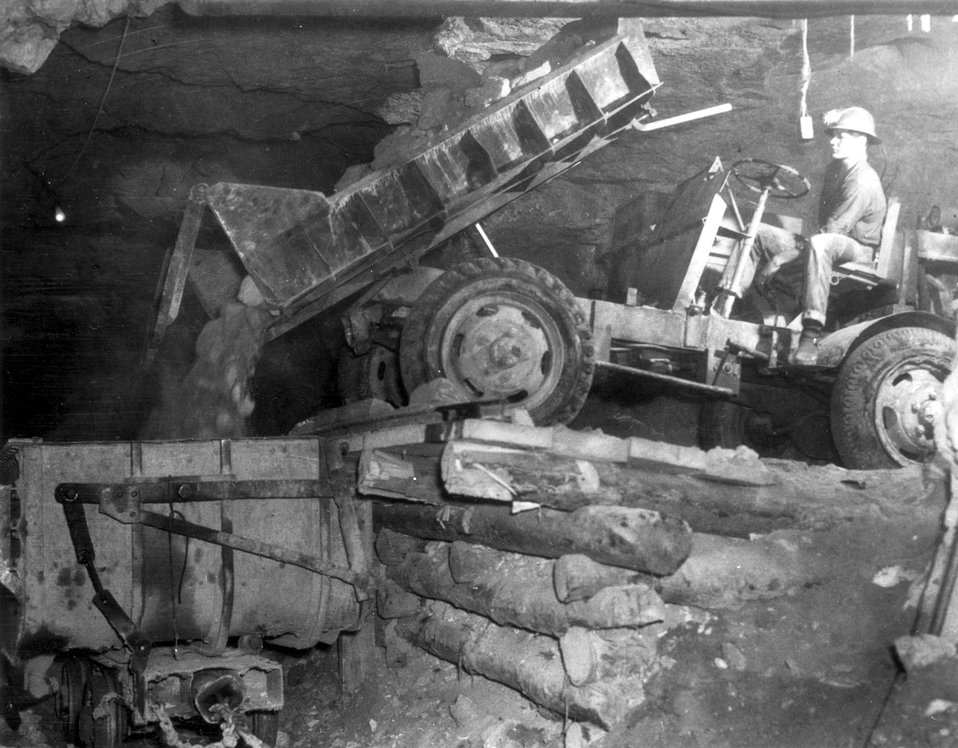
Underground scene in Colorado Plateau mine. c. 1957